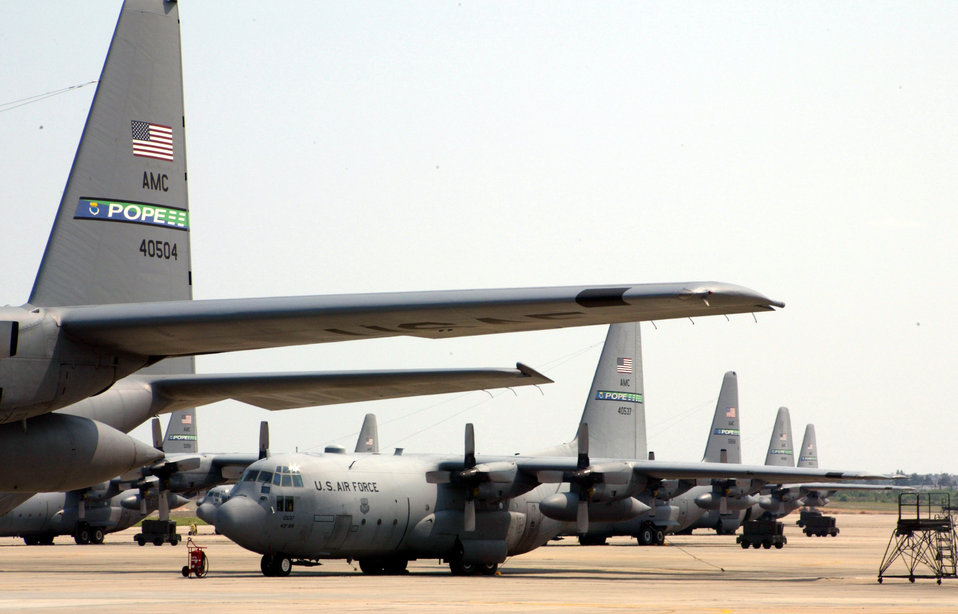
Home again

POPE AIR FORCE BASE, N.C. -- The 43rd Airlift Wing's entire fleet of C-130 Hercules aircraft is home together June 2 for the first time in more than two years. The aircraft are lined up in rows as long as they are deep. The 43rd AW airmen here are already gearing up for the next mission with needed wartime and currency training.